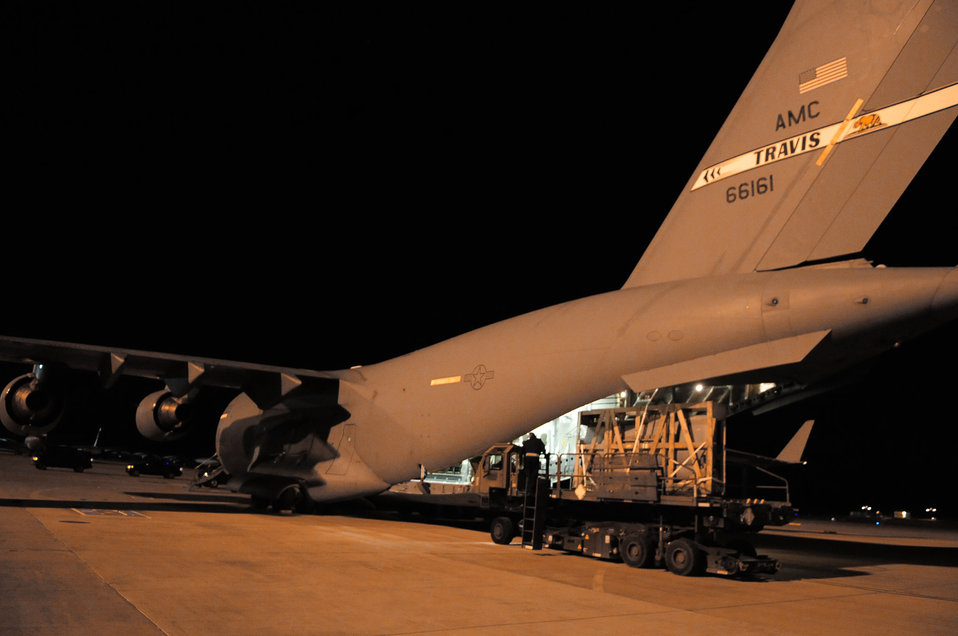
Odyssey Dawn

Airmen unload a pallet from a C-17 Globemaster III March 28, 2011, in support of Operation Odyssey Dawn.